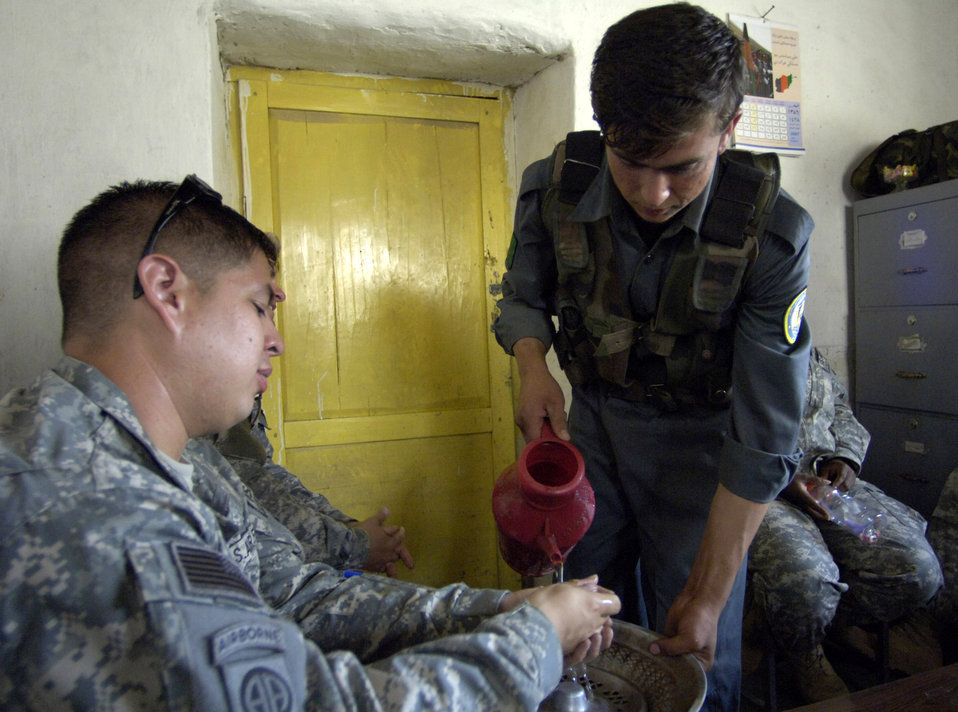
Airmen go hand-to-hand with Afghan National Police

Panjshir Provincial Reconstruction Team member Staff Sgt. Andre Sanchez-Romero gets his hands rinsed off by a member of the Afghan National Police before enjoying a traditional meal of nan (bread), rice, roasted meat, fresh vegetables and chai tea provided by Anaba district police chief Zardot Towhidi Aug. 6. Sergeant Sanchez-Romero is deployed from Minot Air Force Base, N.D.